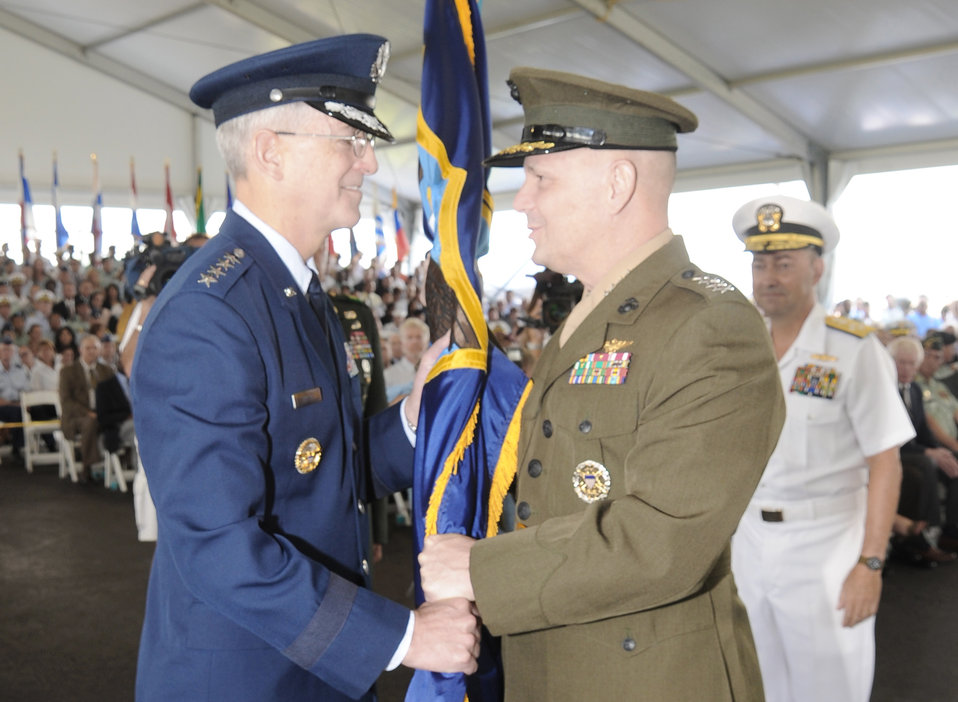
Air Force general becomes newest SOUTHCOM commander

Gen. Douglas M. Fraser receives the U.S. Southern Command guidon from Marine Gen. James E. Cartwright during the change-of-command ceremony June 25 at SOUTHCOM headquarters in Miami. General Fraser relieved Navy Adm. James Stavridis as commander of SOUTHCOM. General Cartwright is the vice chairman of the Joint Chiefs of Staff.